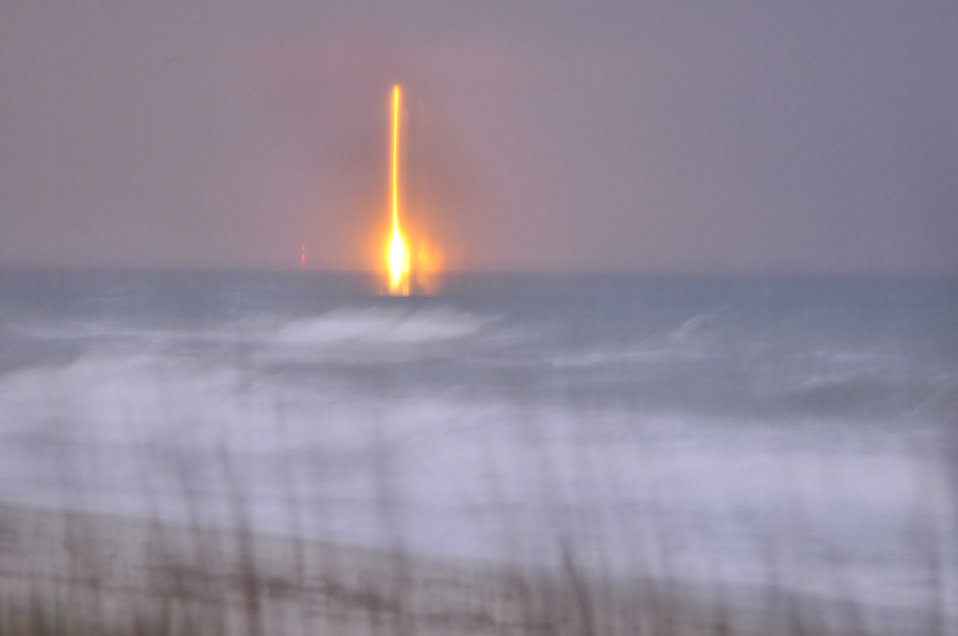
Reservists support rocket launch

Air Force Reserve helicopter, maintenance and life support personnel from the 920th Rescue Wing, along with mission partners from their host wing, the 45th Space Wing, supported the successful launch of a Delta IV-Heavy Launch Vehicle Nov. 21, 2010, from Cape Canaveral Air Force Station, Fla. Both wings are assigned to nearby Patrick Air Force Base.